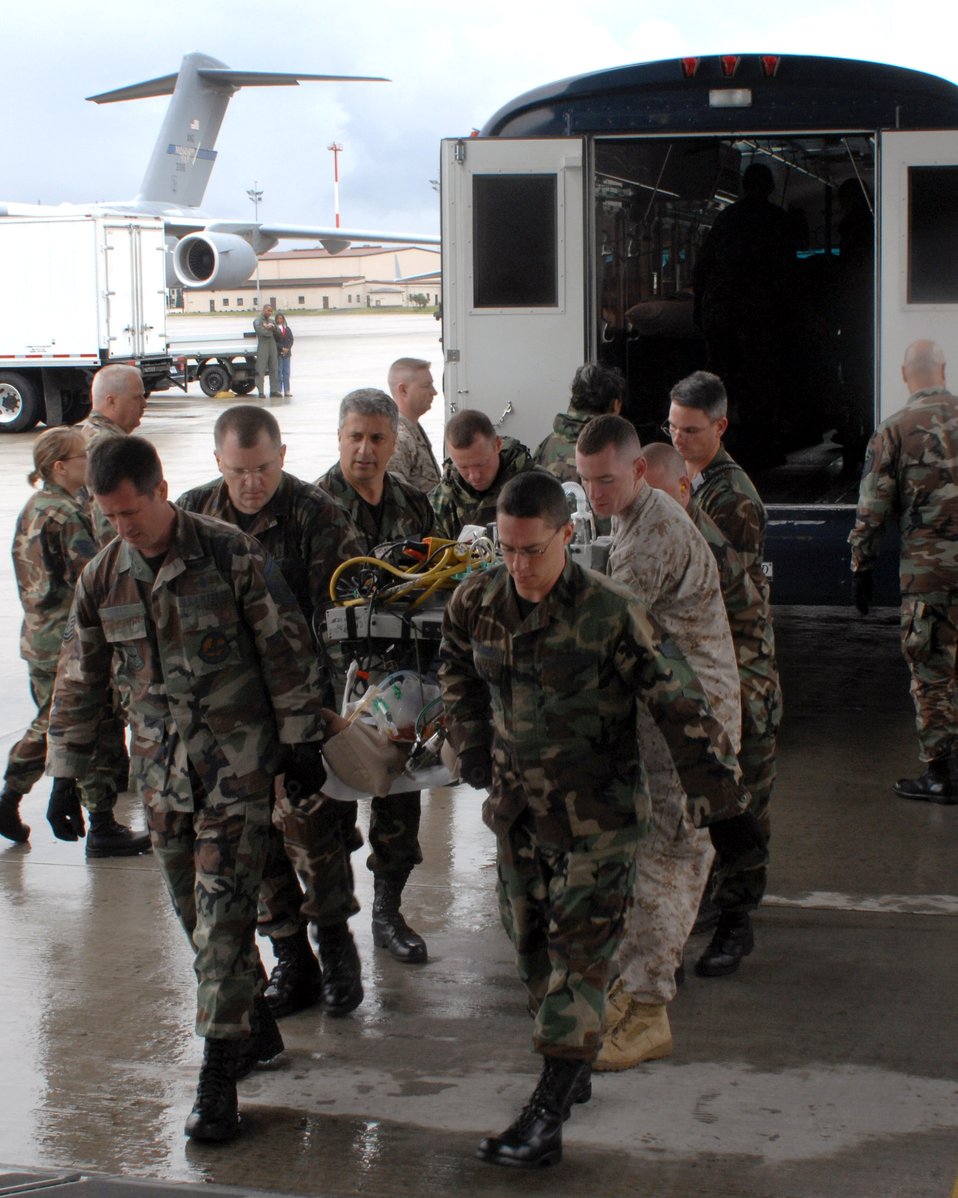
CMSAF assists with aeromedical evacuation

Areomedical evacuation flight members and 435th Aerospace Medicine Squadron members help load a patient onto an aeromedical evacuation flight July 10 at Ramstein Air Base, Germany.